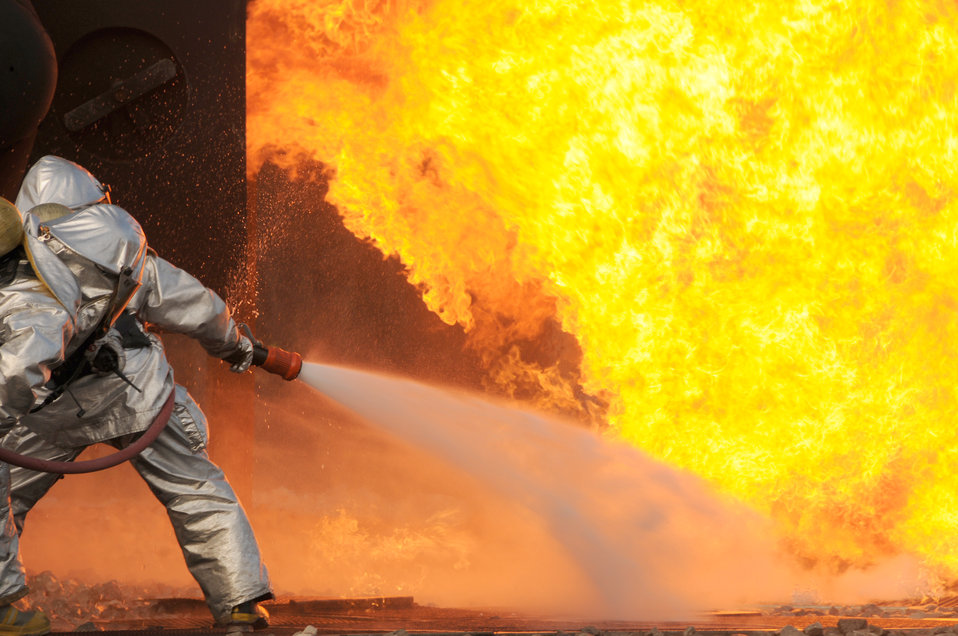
Firefighters sharpen their skills

Firefighters from the Ohio Air National Guard's 180th Fighter Wing extinguish an aircraft fire during a training exercise Oct. 16, 2010, at the Phelps Collins Combat Readiness Training Center in Alpena, Mich.